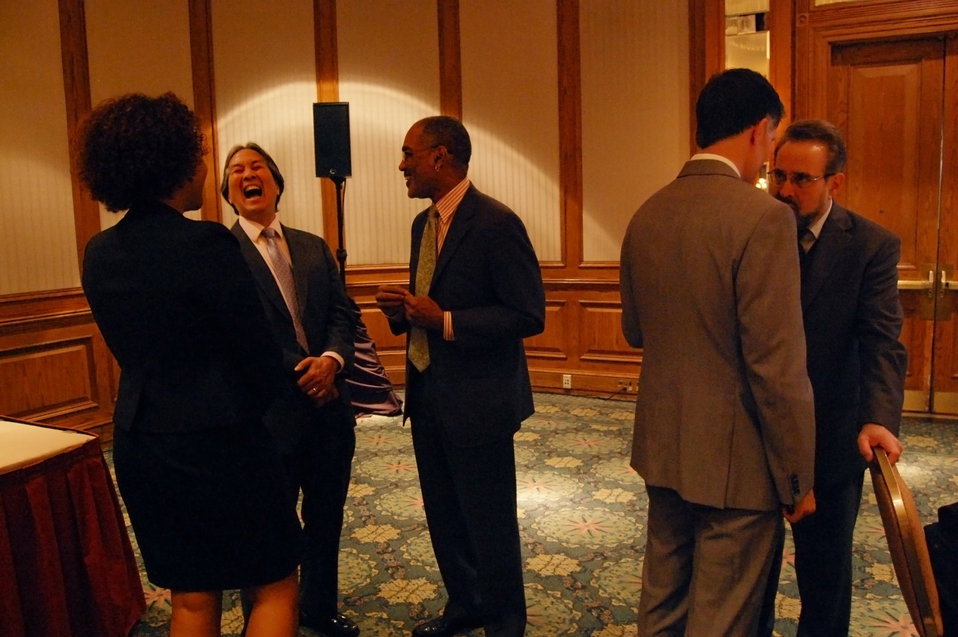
PACHA conf026